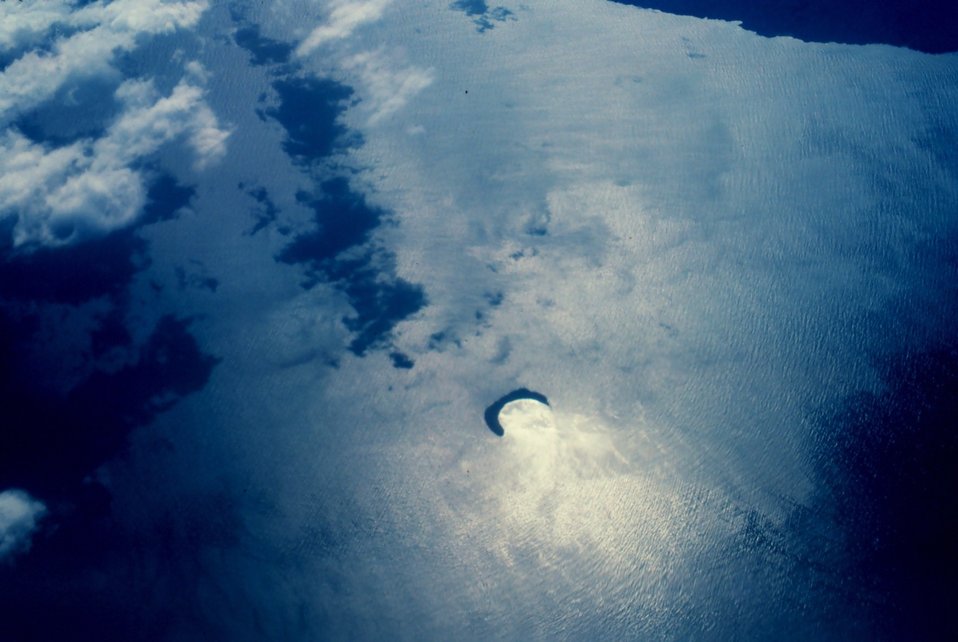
Molokini Island, a crescent island, is rim of volcanic crater opening to north Shore of Kahoolawe is visible in upper right. Over Alalakeiki Channel.